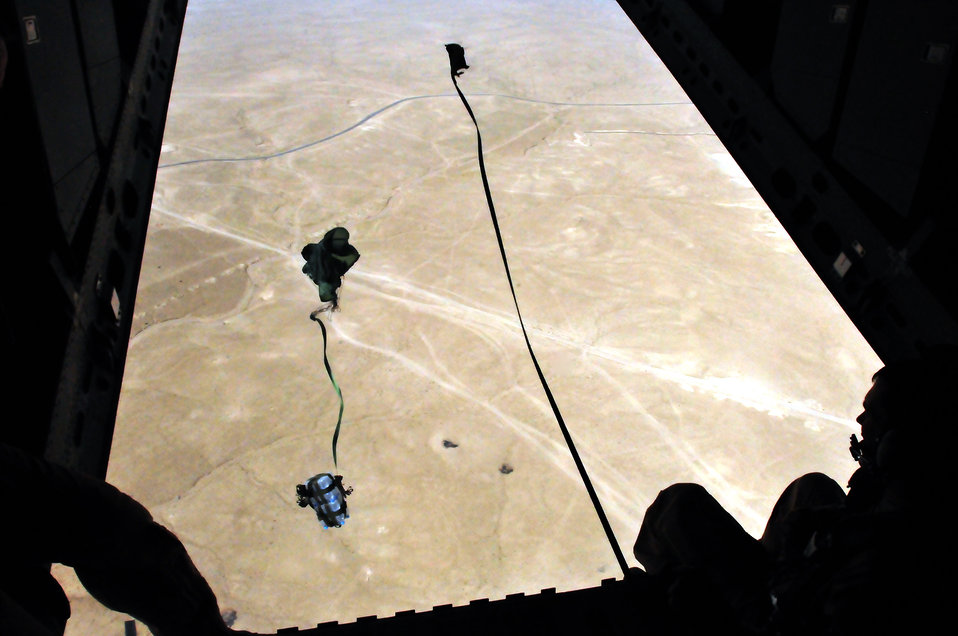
C-27 over Afghanistan

Airmen watch supplies go to their expected target during an air drop July 1, 2010, over Afghanistan. This is the first air drop conducted by a crew of the C-27 Spartan in Afghanistan..